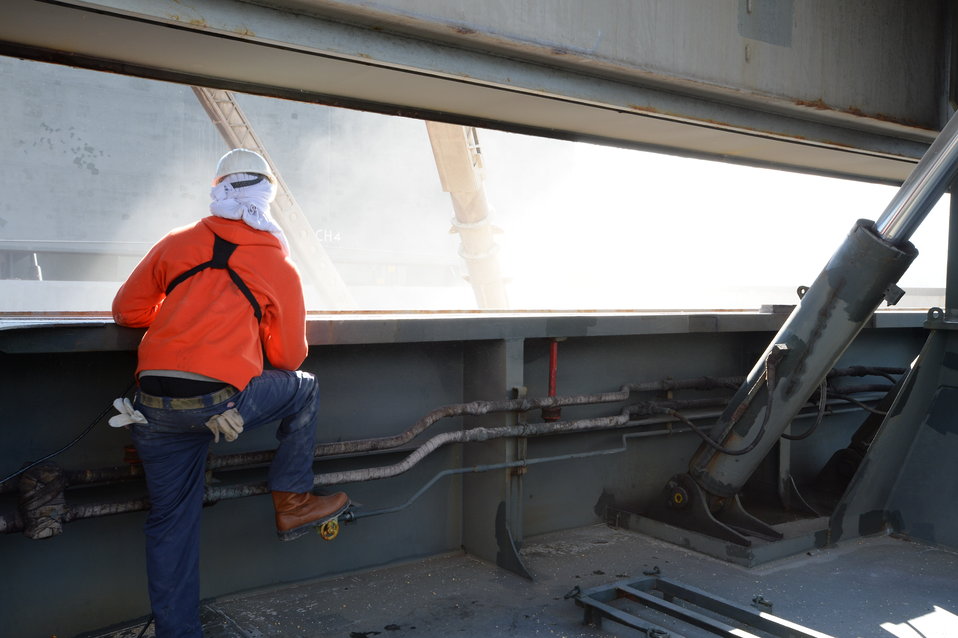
U.S. Department of Agriculture’s (USDA) Grain Inspection, Packers and Stockyards Administration (GIPSA) Federal Grain Inspection Service (FGIS) inspectors oversee the transfer of grain to storage facilities near the Port of New Orleans in New Orleans, LA on Tuesday, Nov. 19, 2013.